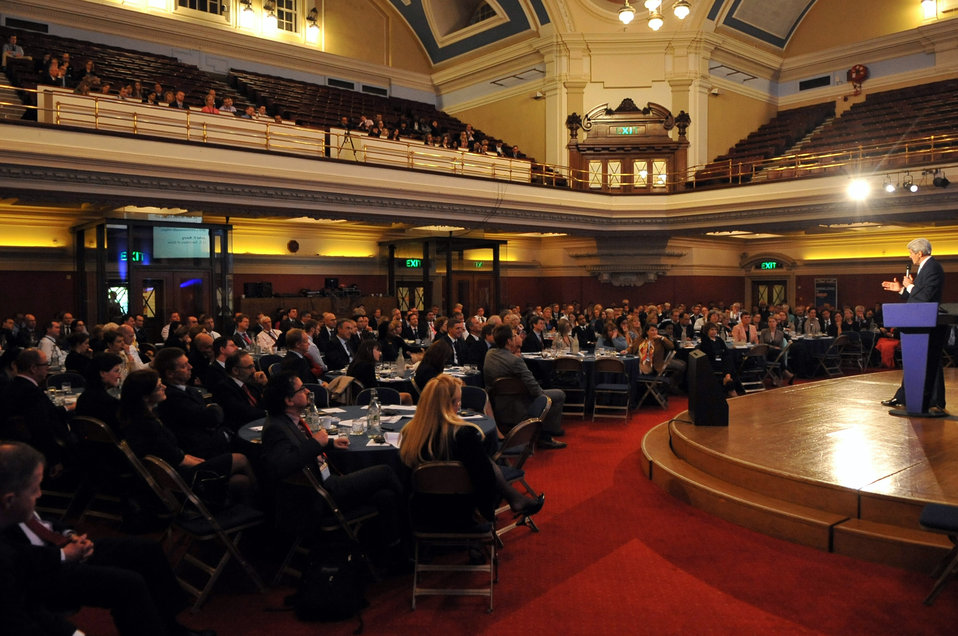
Secretary Kerry Addresses British Chiefs of Mission Conference

U.S. Secretary of State John Kerry addresses the Chiefs of Mission for British diplomatic facilities worldwide as they attend a conference in London on May 15, 2014.